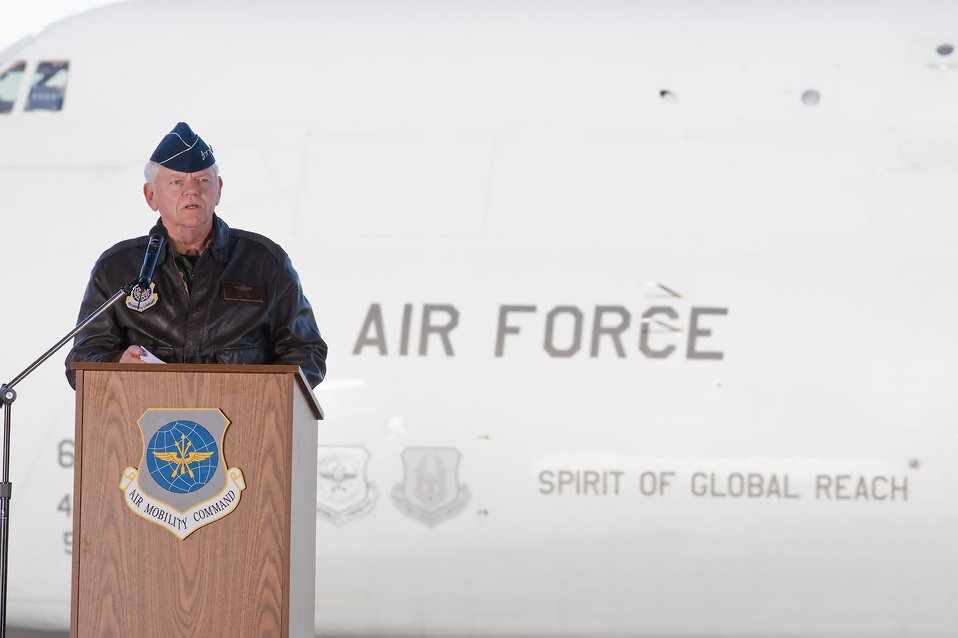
The First C-5M Super Galaxy Arrives at Dover AFB

Gen. Arthur Lichte, Air Mobility Command commander, presents Team Dover's first C-5M Super Galaxy, The Spirit of Global Reach, during a ceremony on Dover Air Force Base, Del., Feb. 9.